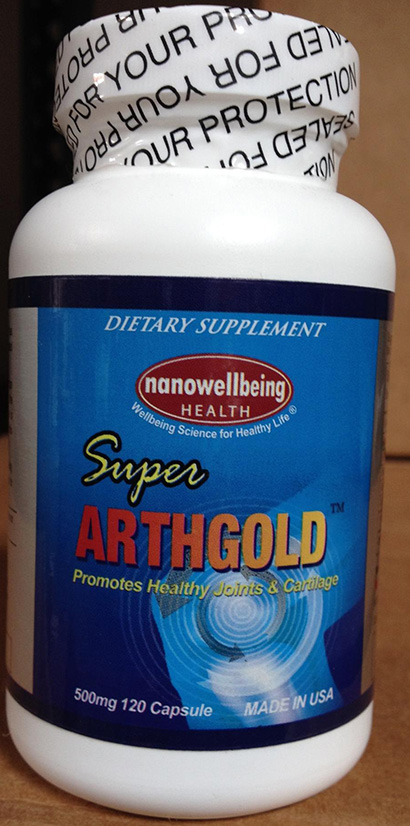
RECALLED – Dietary Supplement - Super Arthgold

April 21, 2014 – Product Recall – Nano Well-being Health Inc. Issues Voluntary Nationwide Recall of Super Arthgold Due to Undeclared Ingredients.